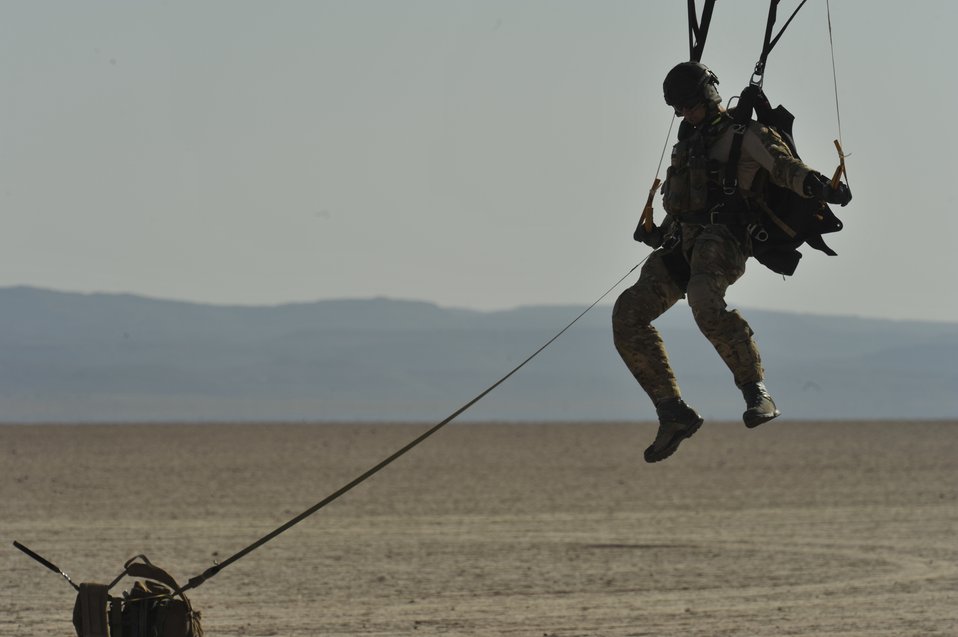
Heroes in training

First Lt. Eric Hansen, an 82nd Expeditionary Rescue Squadron combat rescue officer, successfully lands after jumping out of a U.S. Marine Corps KC-130J for a training mission in the Grand Bara Desert, Djibouti, Oct. 21, 2011. The training mission required the pararescue team to safely parachute into a simulated crash site, locate and treat casualties, and coordinate evacuation while maintaining security.